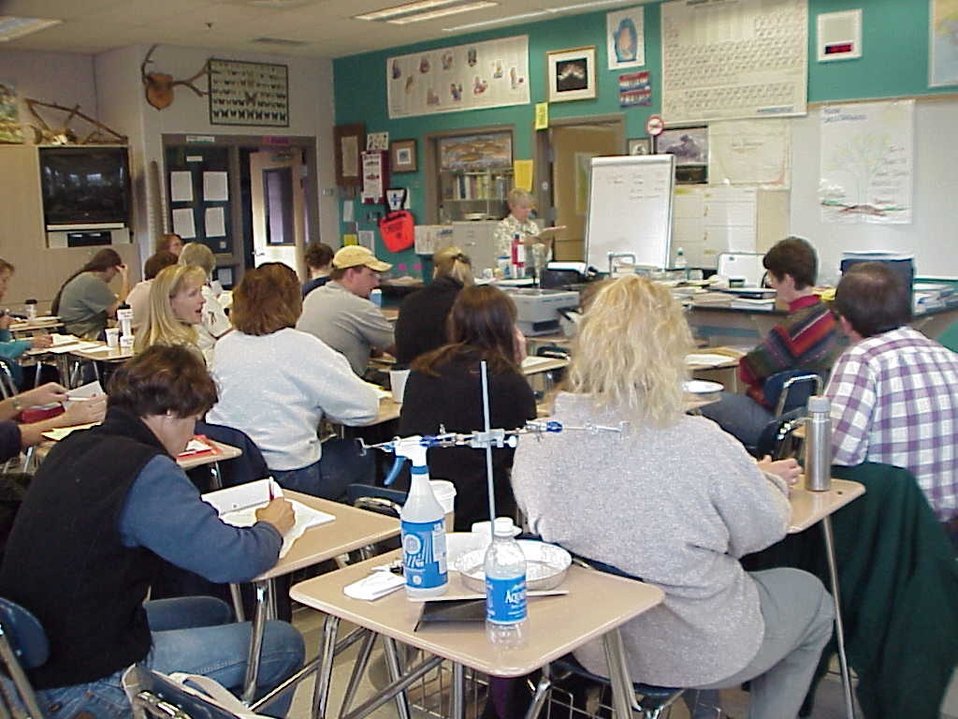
Environmental Education Fire Workshop Timberline High School Fall 2000